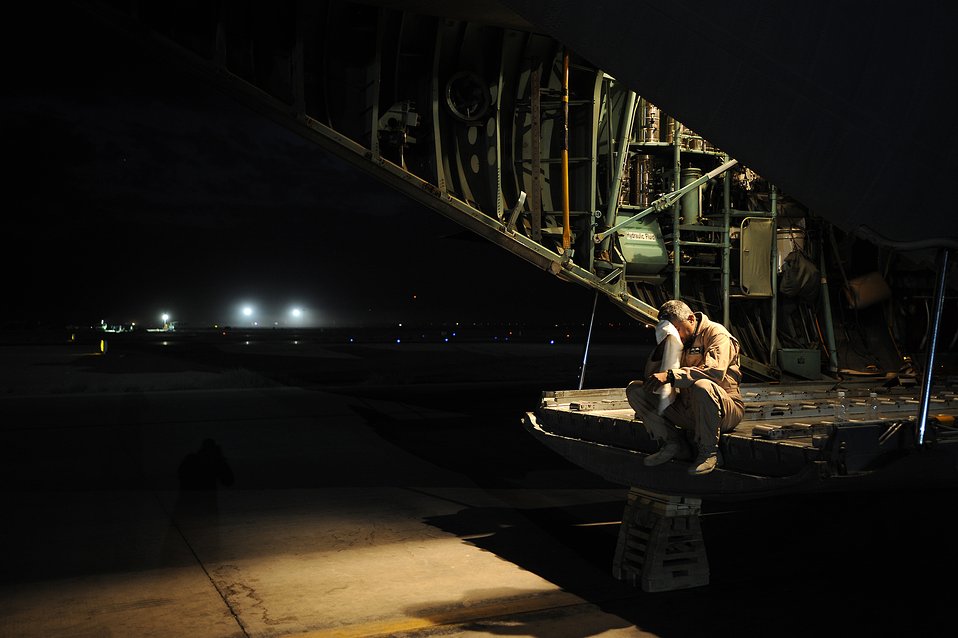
Working by moonlight

An Iraqi airman waits for cargo for a C-130 aircraft Oct. 11 at Joint Base Balad, Iraq. The Iraqi airman was on a cargo resupply mission with members of the U.S. Air Force 370th Air Expeditionary Advisory Squadron. He is assigned to the 23rd Squadron, which operates three C-130s used for transporting troops, supplies and distinguished visitors.